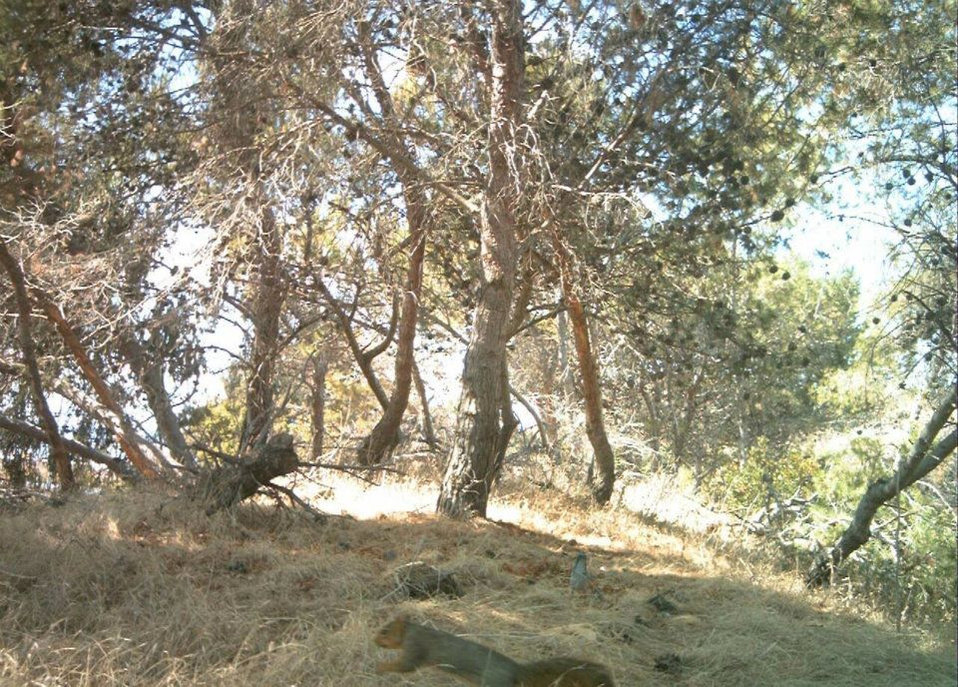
fox squirrel and scrub jay

Don Edwards San Francisco Bay National Wildlife Refuge, CA
Camera trap photo: Bryan White, USFWS